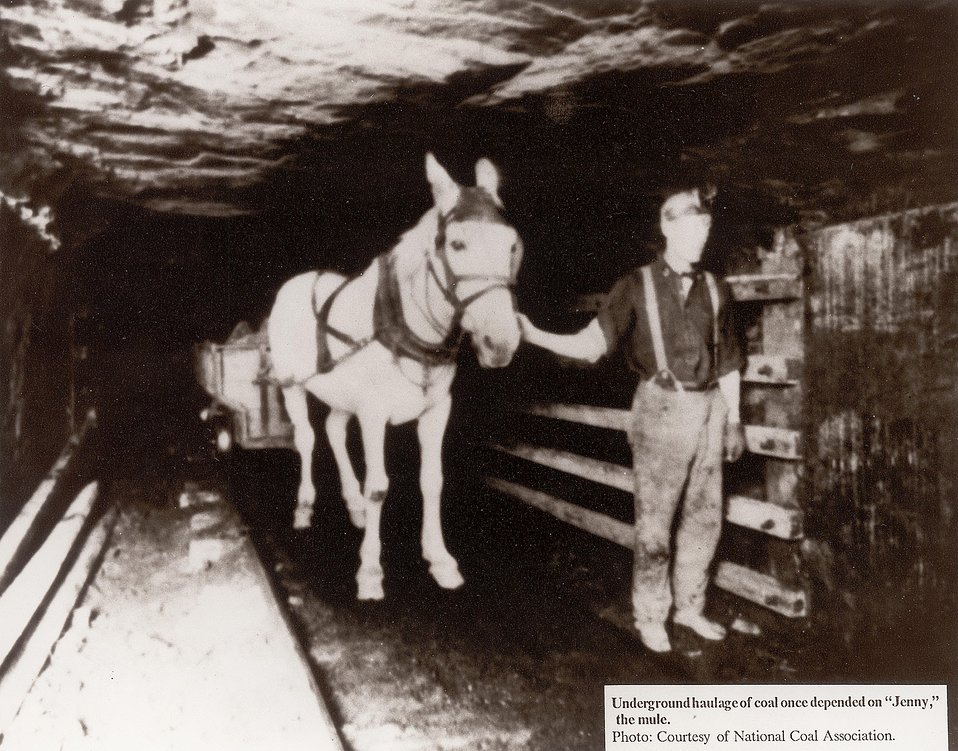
Underground haulage of coal once depended on 'Jenny', the mule.